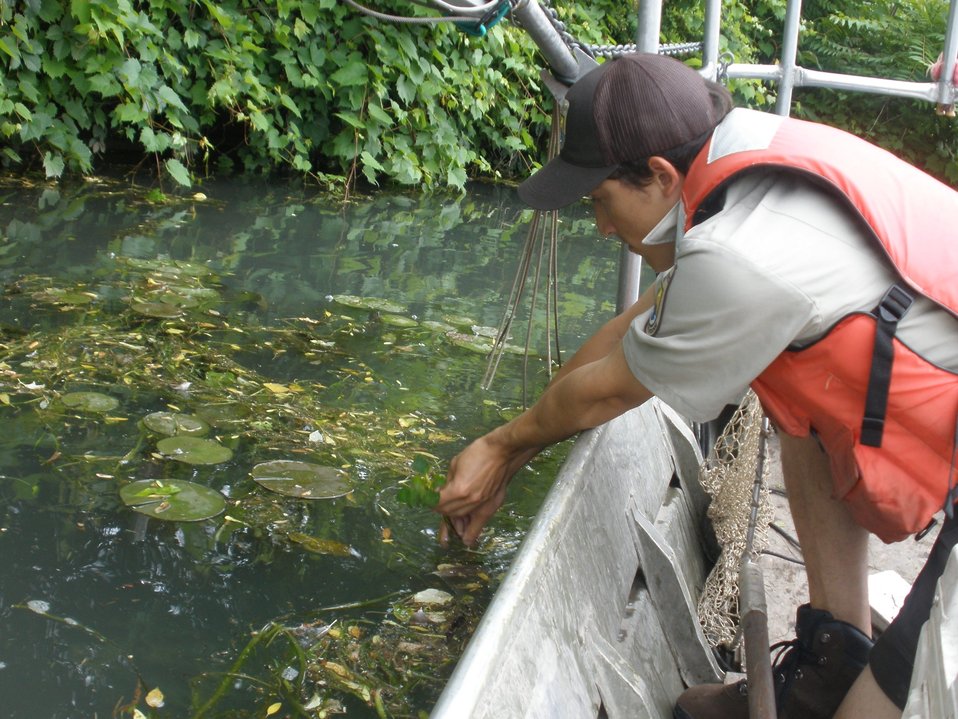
Water Chestnut Early Detection

Lower Great Lakes FWCO STEP Employee, Robert Haltner, removing water chestnut rosettes that have expanded from the source location in Ellicott Creek Park. Since 2008, Lower Great Lakes FWCO crews have conducted weekly summer surveillence up to 10 miles away from the source location to eliminate any expanding plants. In 2010, over 2,000 rosettes were collected outside the park. So far in 2012, very few rosettes have been found, likely due to consistent early detection efforts.